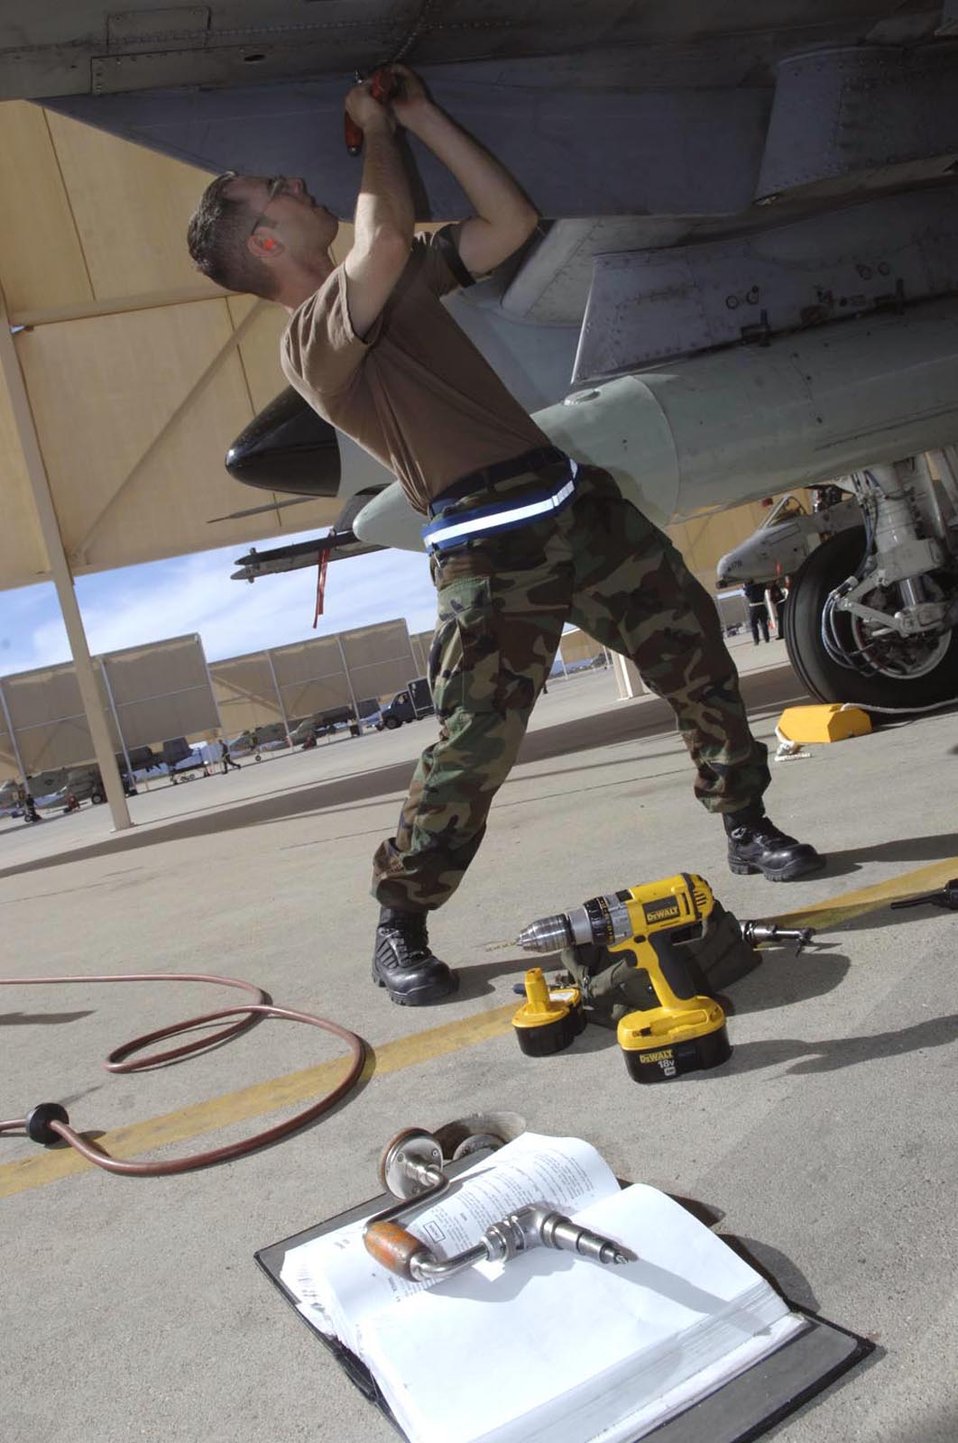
We're ready!

Staff Sgt. Christopher Jackson works on an A-10 Thunderbolt II Feb. 17 during an operational readiness exercise at Davis-Monthan Air Force Base, Ariz., being conducted by the Air Combat Command inspection team. The ACC inspectors test the ability of 355th Wing Airmen to prepare to deploy and fight when called. Sergeant Jackson is a metals technician assigned to the 355th Equipment Maintenance Squadron.